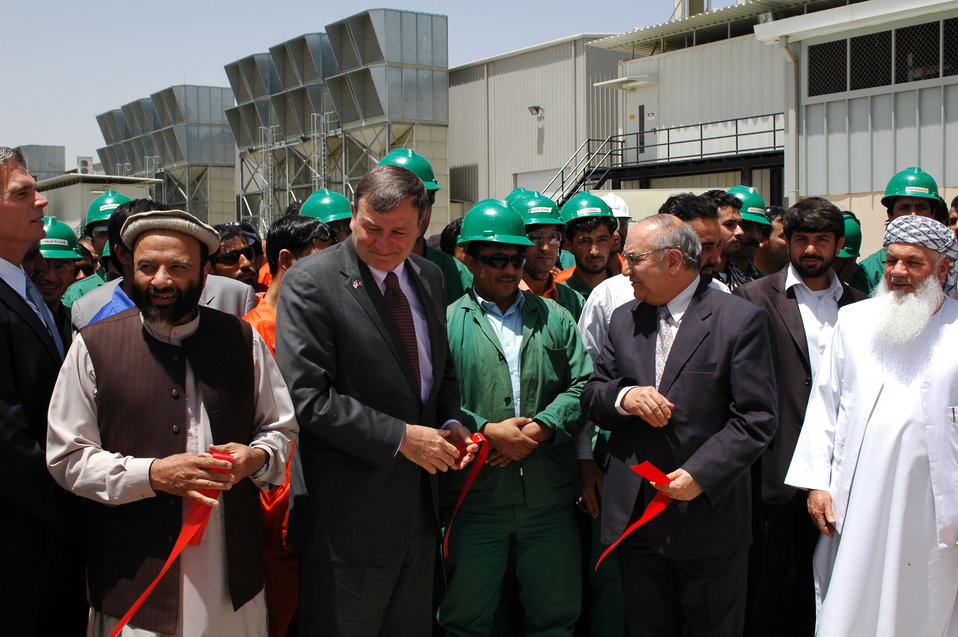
105 MW Tarakhil Power Plant Handover